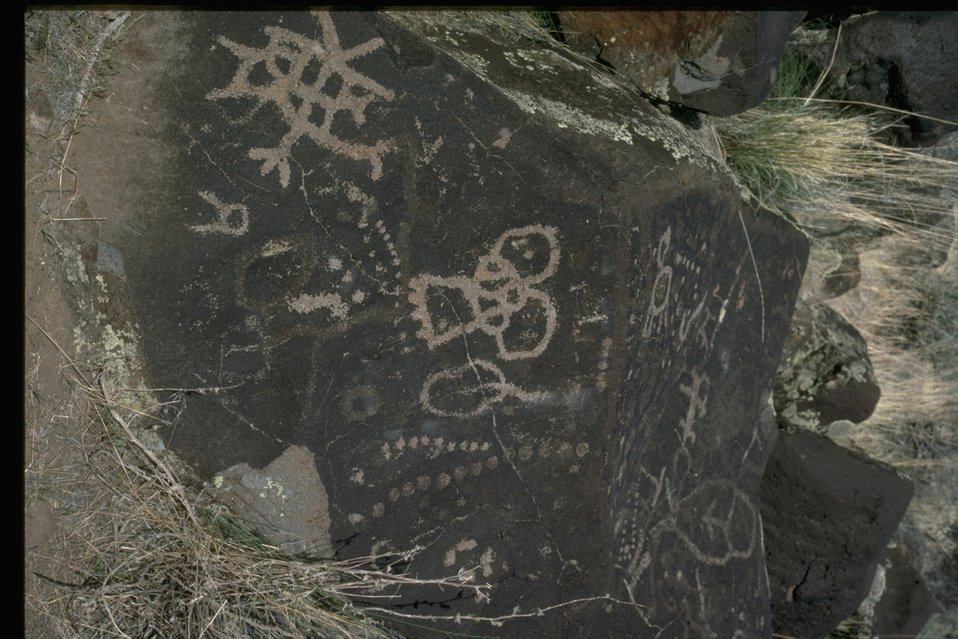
Rock Art found 2 miles below the Hole in the Ground. OR 3-59